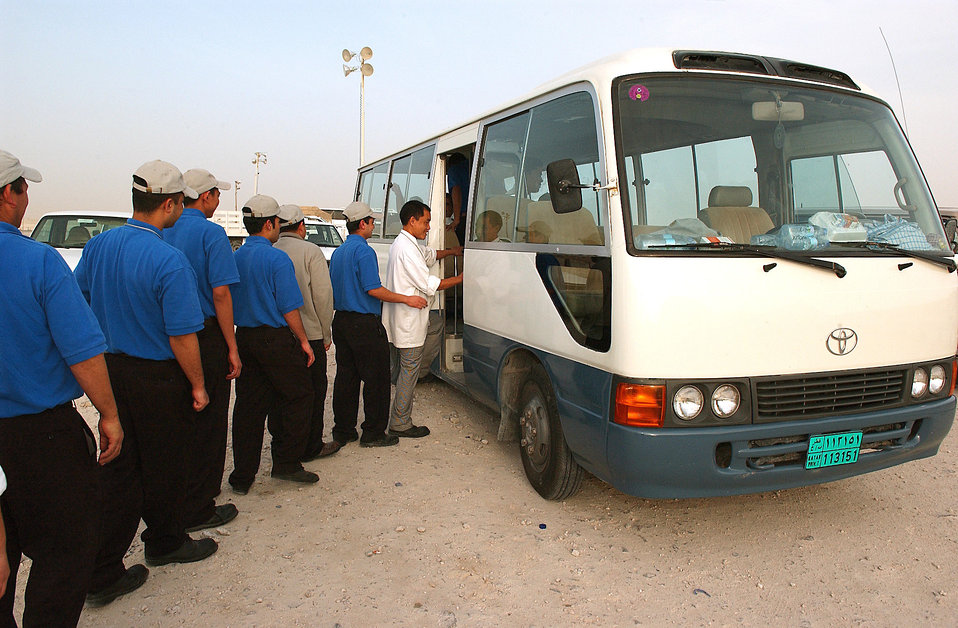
Escorts serve as base's second line of defense

SOUTHWEST ASIA -- Foreign workers board a bus.